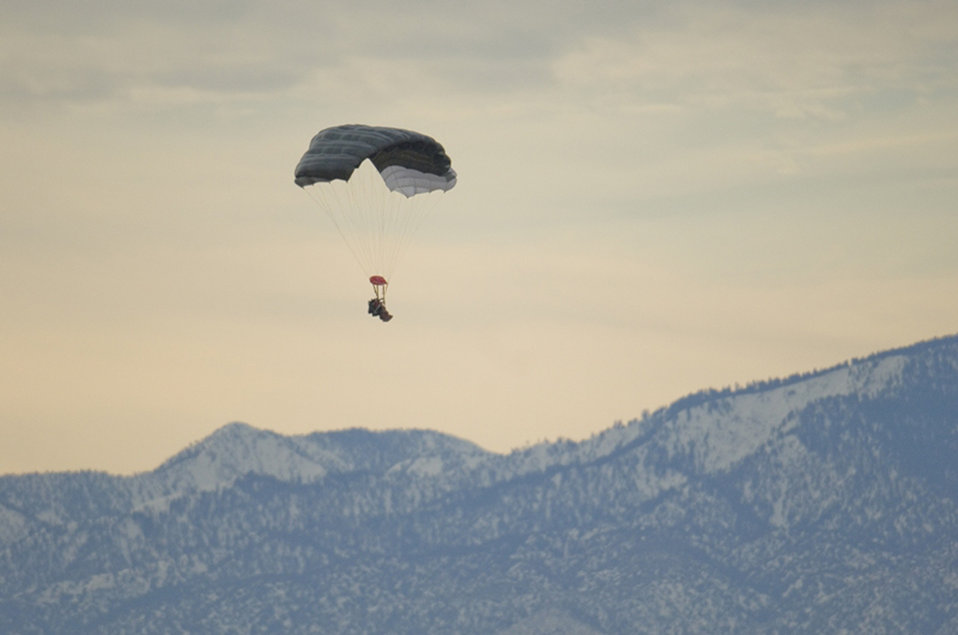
New parachute system

Members of the 418th Flight Test Squadron perform tests on an experimental parachute system called the Guardian Angel Advance Parachute System. These GAAPS system tests involve fixing the parachute system to a dummy, which will range in weight from 250 to more than 400 pounds, depending on the weight each test requires. The system is designed to take the place of the current one, which was originally created in the 1960s.